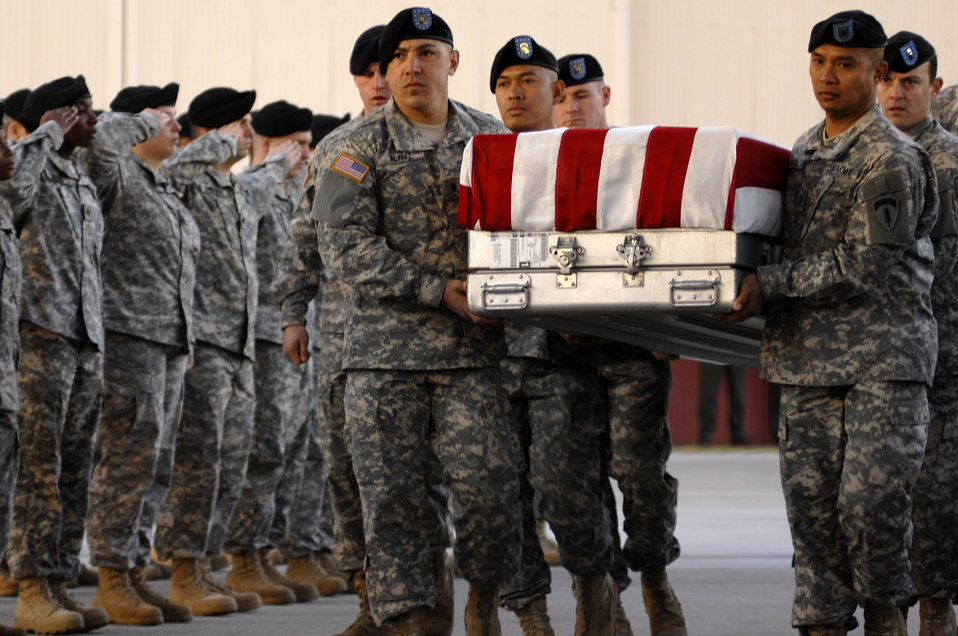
Fallen Airmen, Soldiers honored at Aviano

Soldiers from the 1st Battalion, 214th Aviation Regiment load a fallen Soldier onto a C-130 Hercules during a repatriation ceremony Nov. 13 at Aviano Air Base, Italy, for six servicemembers who were killed when an Army UH-60 Black Hawk helicopter attached to the 1st Battalion, 214th Aviation Regiment crashed Nov. 8, 22 miles southwest of Aviano, Italy.